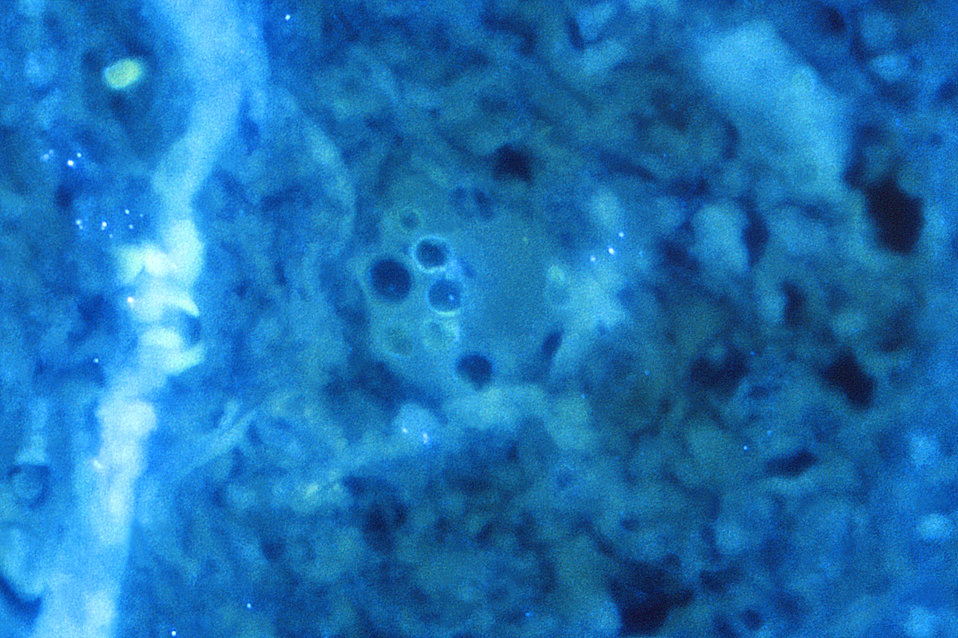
Magnified 562X, this "digested", and fluorescent antibody-stained photomicrograph reveals the presence of Blastomyces dermatitidis antigens in this human lung tissue specimen.